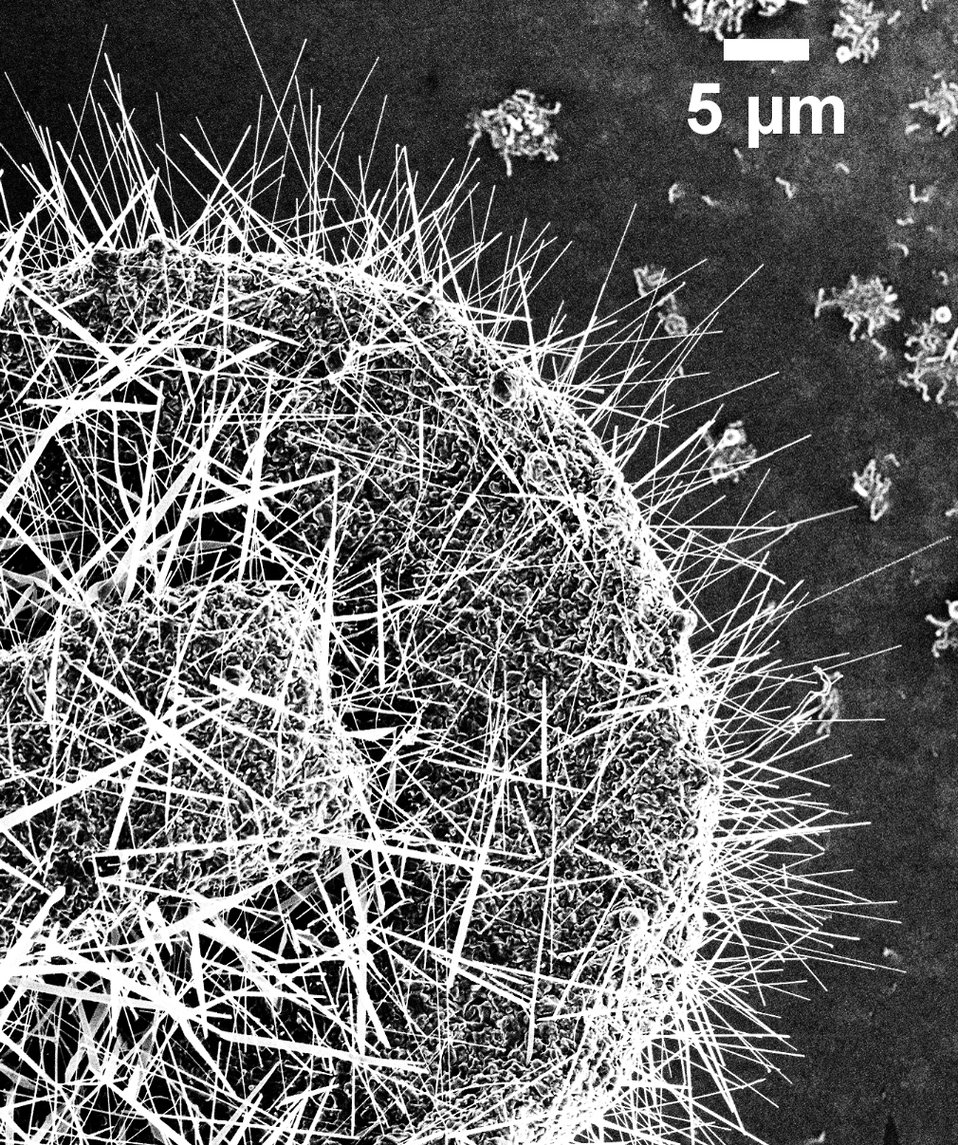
Nanowires

ZnO nanowires to grow out of the circular copper substrate in all directions, as seen in this scanning electron micrograph. Detail image shows copper droplets at the tip of some nanowires.